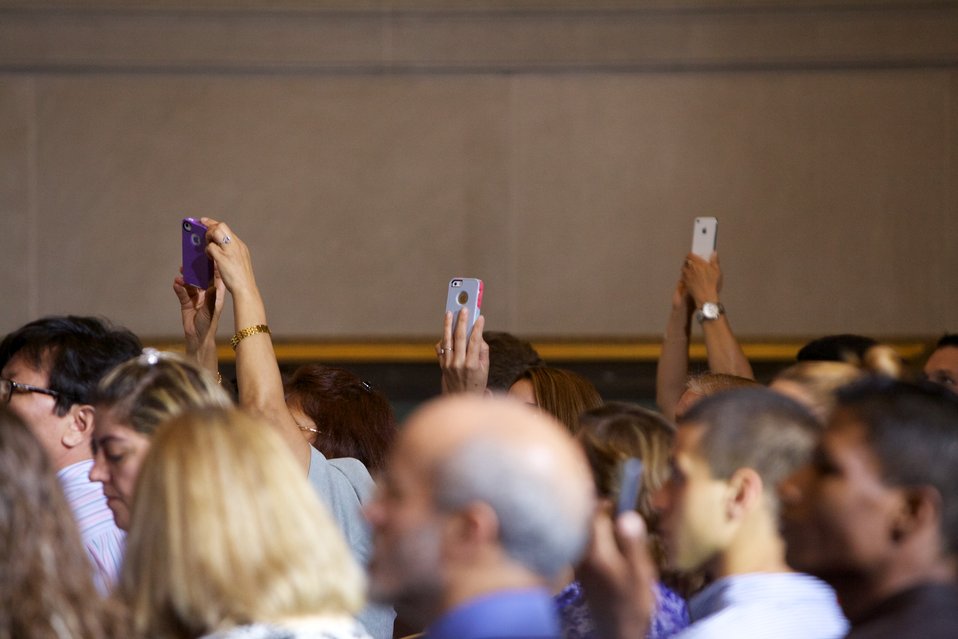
Naturalization Ceremony with Michelle Obama